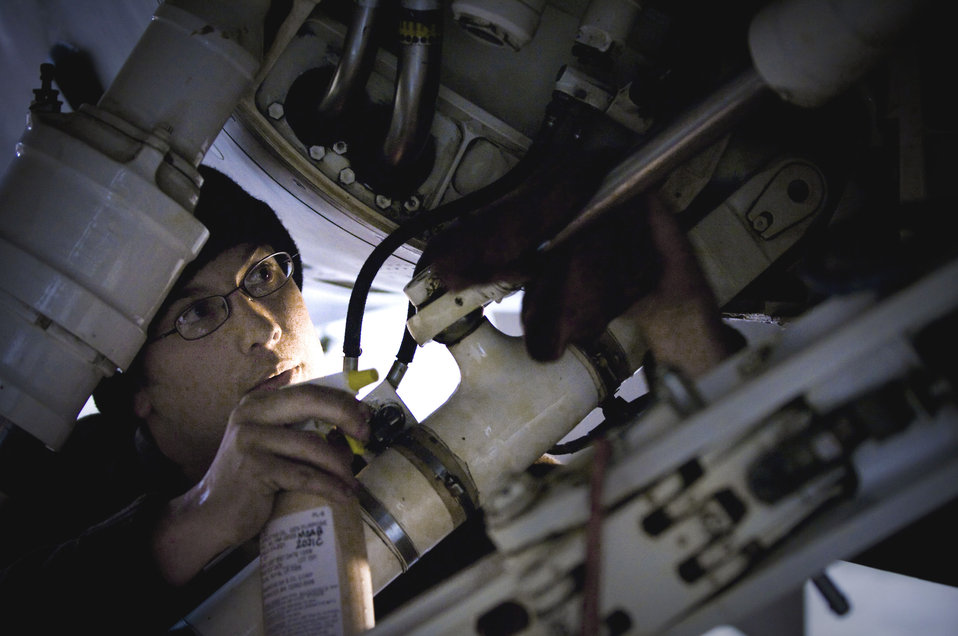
National Guard Airmen augment Misawa maintenance

Staff Sgt. Brad Millhouse sprays lubricant on the landing gear of an F-16 Fighting Falcon March 6 at Misawa Air Base, Japan. Sergeant Millhouse is an F-16 crew chief deployed from the 122nd Fighter Wing from Fort Wayne, Ind., who volunteered to help the 35th Aircraft Maintenance Squadron during a critical low-manning period.